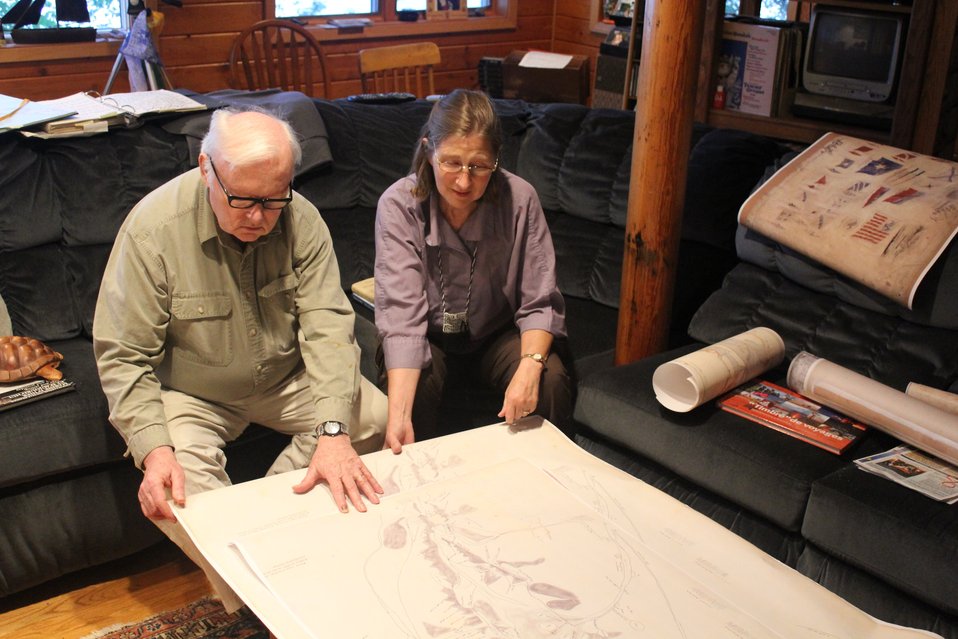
Kathy and William Ruddy, noted Alaskan historians, ethnographers, and legal authorities, examining the Kohklux map brought by Dr. John Cloud to Alaska for use by scholars and native corporations. This was made possible through a grant from NOAA's Preserve America Initiative.